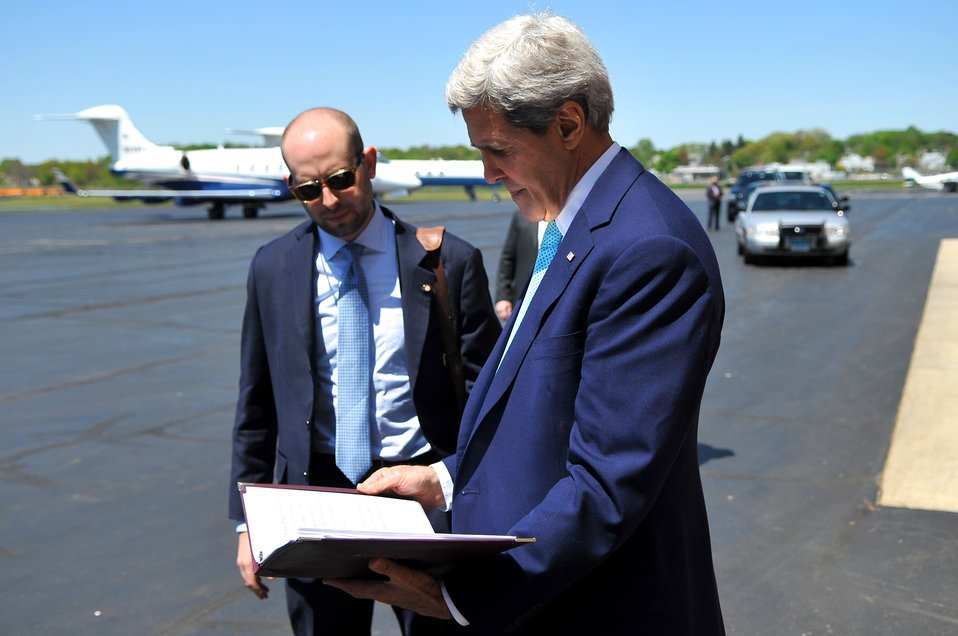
Secretary Kerry Reviews Yale Class Day Remarks With Speechwriter Krupin

U.S. Secretary of State John Kerry and Speechwriter Stephen Krupin reviews the remarks the Secretary will deliver at Yale University's Class Day ceremonies in New Haven, Connecticut, on May 18, 2014.